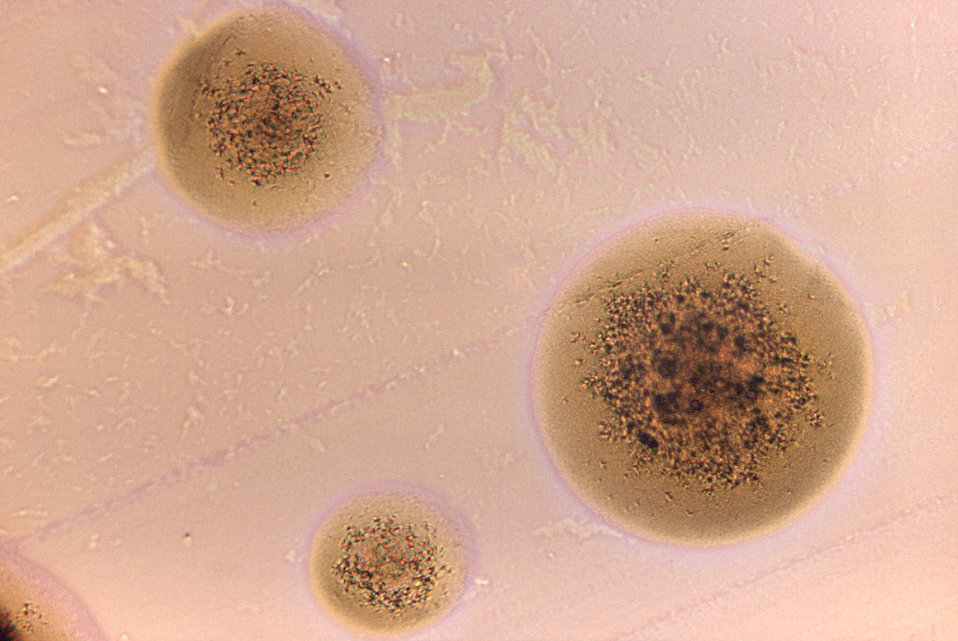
Magnified 125X, this image depicts the morphologic characteristics displayed by three Gram-positive, Actinomyces bovis bacterial microcolonies, of the strain, A-1109, which was cultivated, for a 48 - 72 hour time period, on an unknown culture medium.